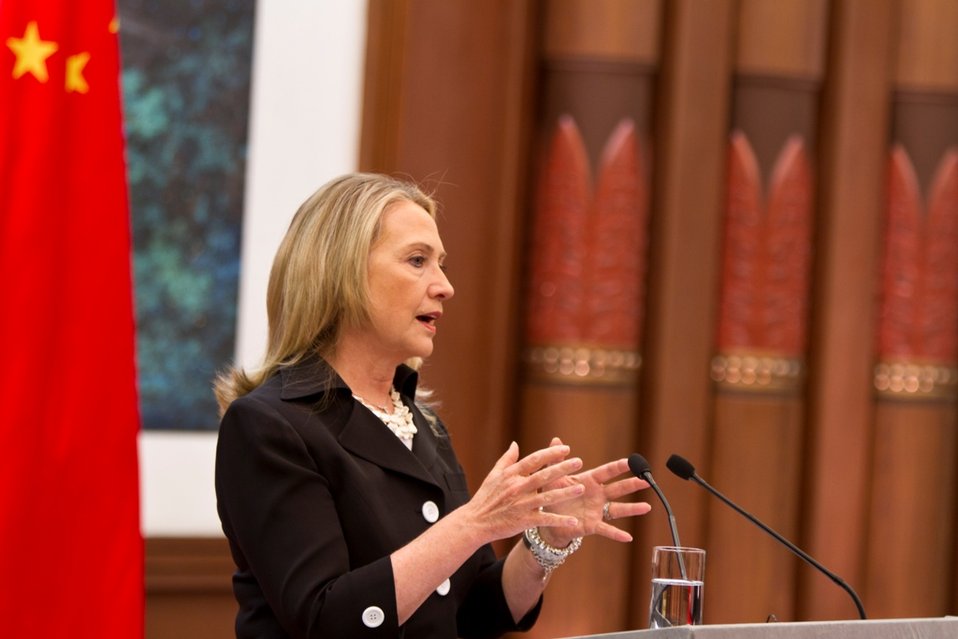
Secretary Clinton Delivers Her Opening Statement

U.S. Secretary of State Hillary Rodham Clinton delivers her opening statement at the Great Hall of the People in Beijing, China, September 5, 2012.